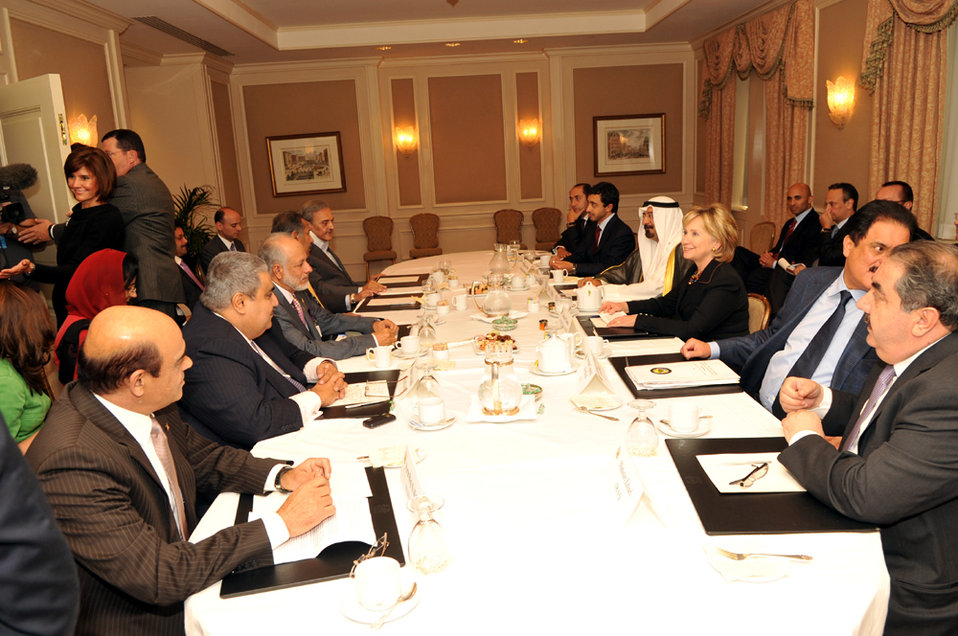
UNGA 2009: Secretary Clinton Meets With Gulf Cooperation Council 3

U.S. Secretary of State Hillary Rodham Clinton meets with members of the Gulf Cooperation Council 3 at the Waldorf Astoria hotel in New York City, New York September 26, 2009.